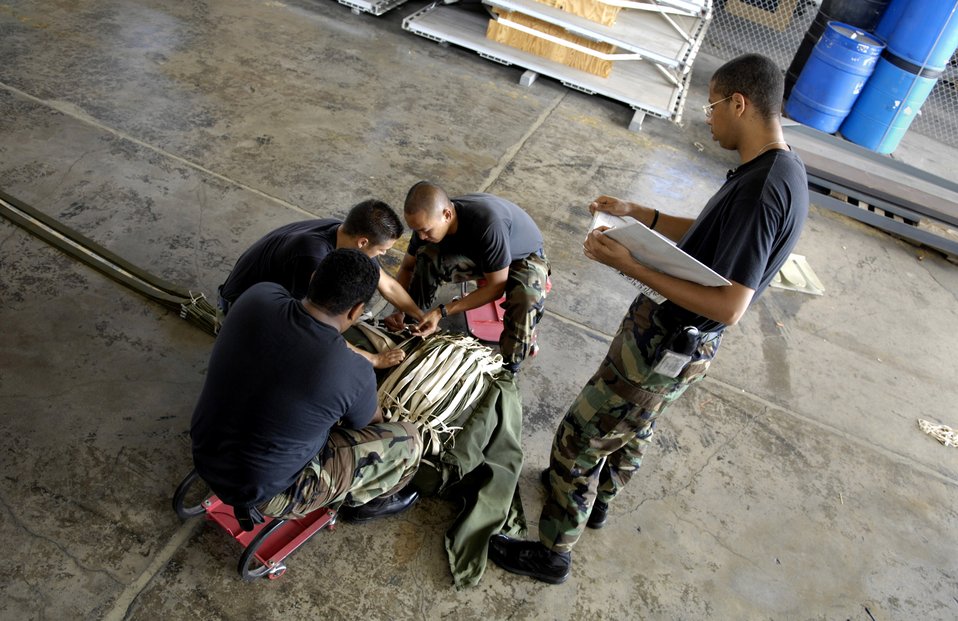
Chute riggers

Airman 1st Class Darrius Armstead watches over his team as they pack a parachute in a hangar at Hickam Air Force Base, Hawaii, June 11. They are preparing the parachute to be rigged to a practice airdrop bundle. The Airmen are from the 15th Logistics Readiness Squadron Combat Mobility Element.